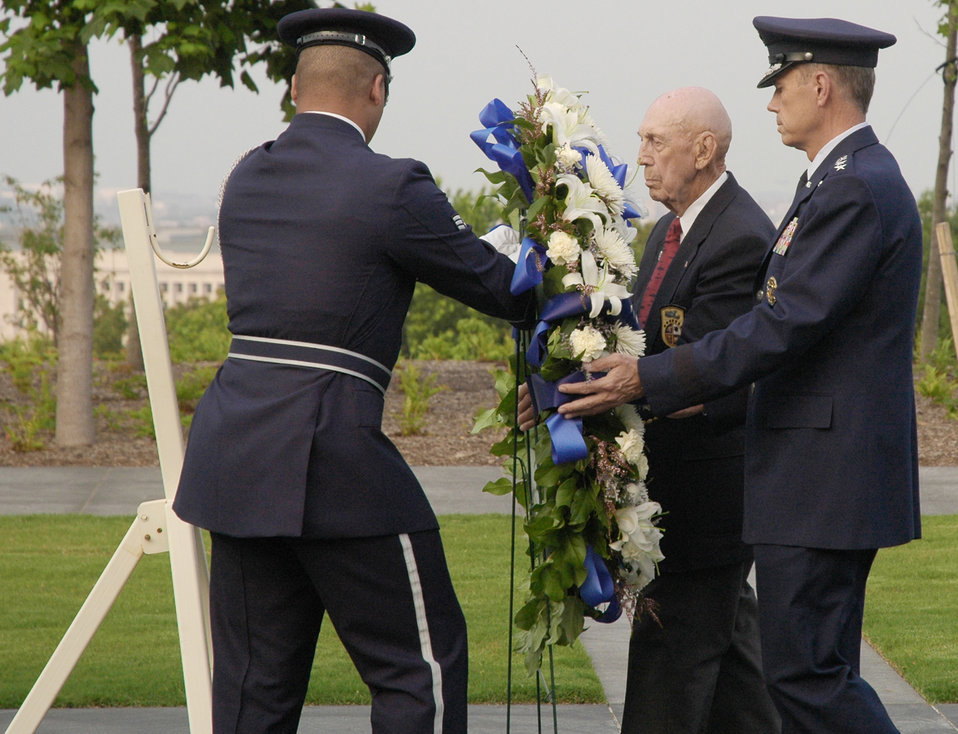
In memoriam

Air Force Vice Chief of Staff Gen. William M. Fraser III and surviving Doolittle Raider Richard Cole are assisted by an Air Force Honor Guard member during a wreath-laying ceremony June 19 at the U.S. Air Force Memorial in Arlington, Va. The wreath was laid near the Missing Man Wall to honor Maj. Gen. David Jones, a former Doolittle Raider and prisoner of war, who was buried at Arlington National Cemetery earlier that day.